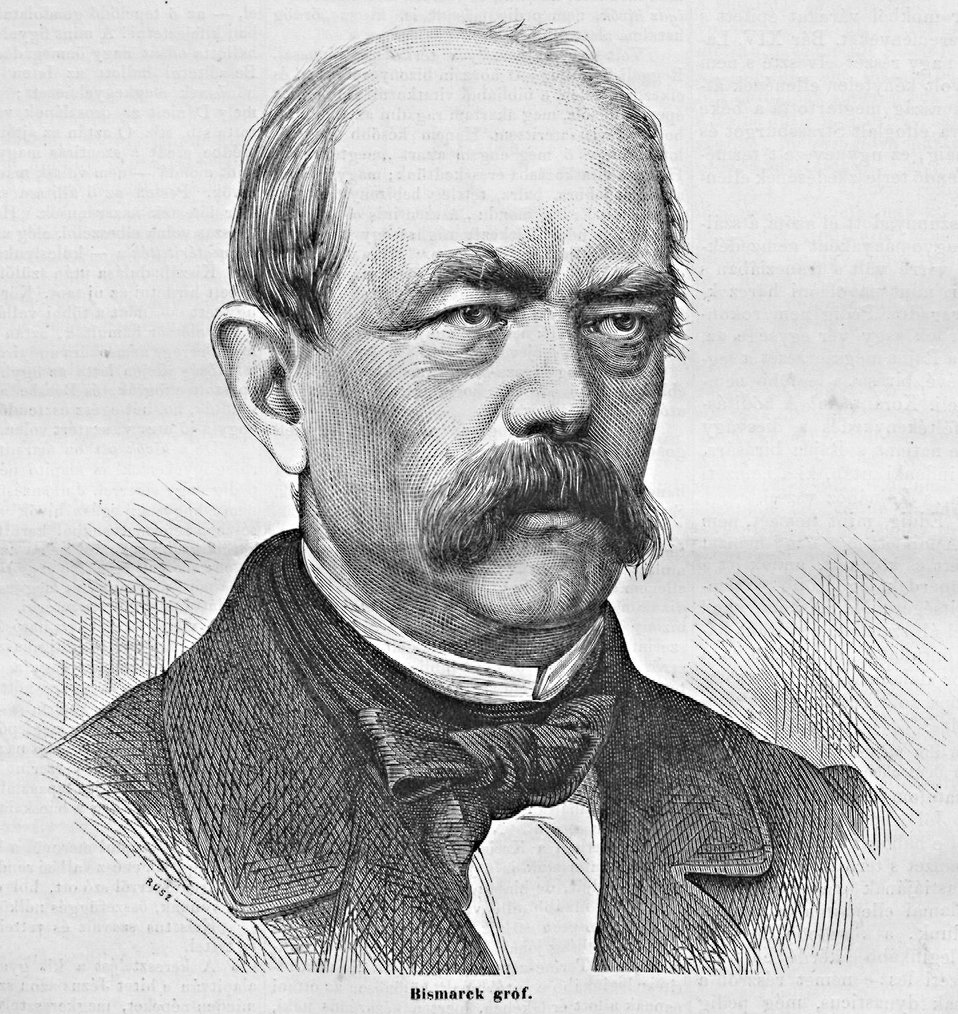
Bismarck Rusz